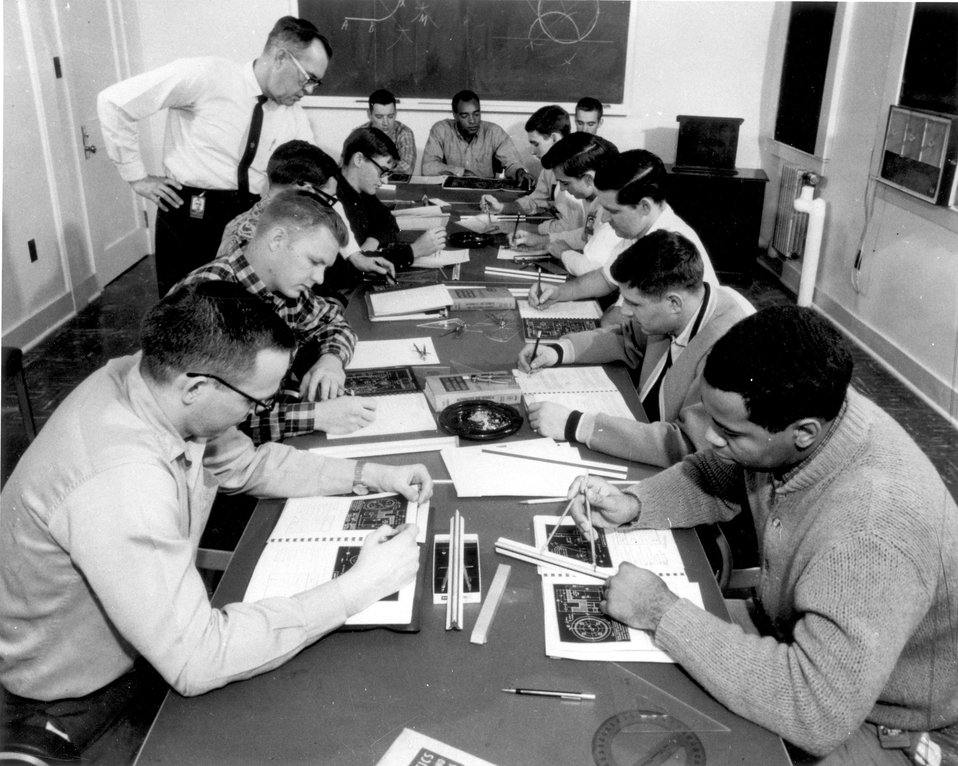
Apprentice training at Oak Ridge National Laboratory includes classroom work in addition to direct instruction in craft work. c. 1967